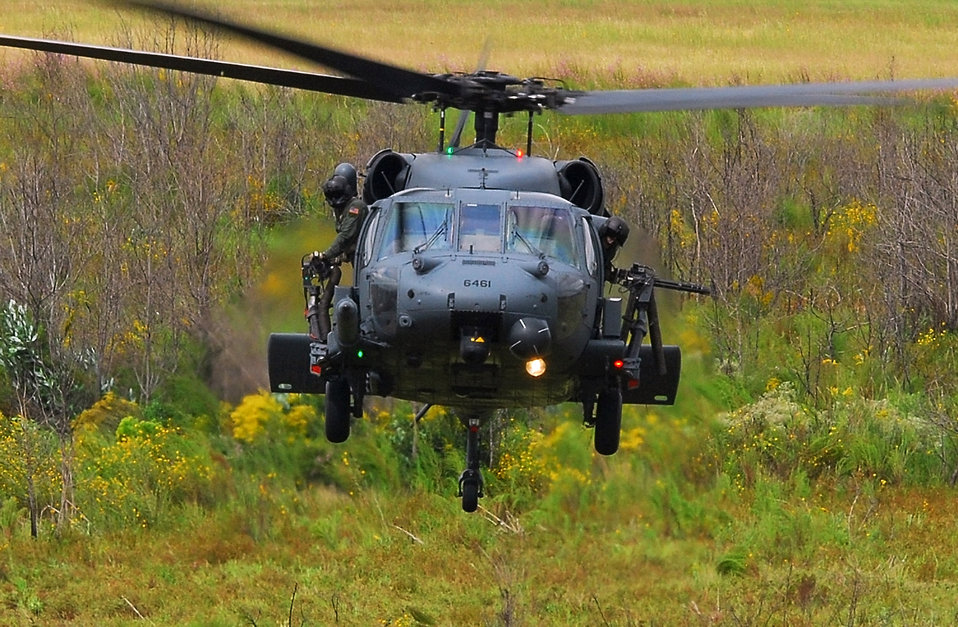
Combat search and rescue training

An HH-60G Pave Hawk from the 41st Rescue Squadron hovers during a combat search and rescue demonstration at Moody Air Force Base, Ga., Oct. 4. The primary role of the HH-60G is to conduct day or night CSAR operations into hostile environments to recover downed aircrew or other isolated military members during war.